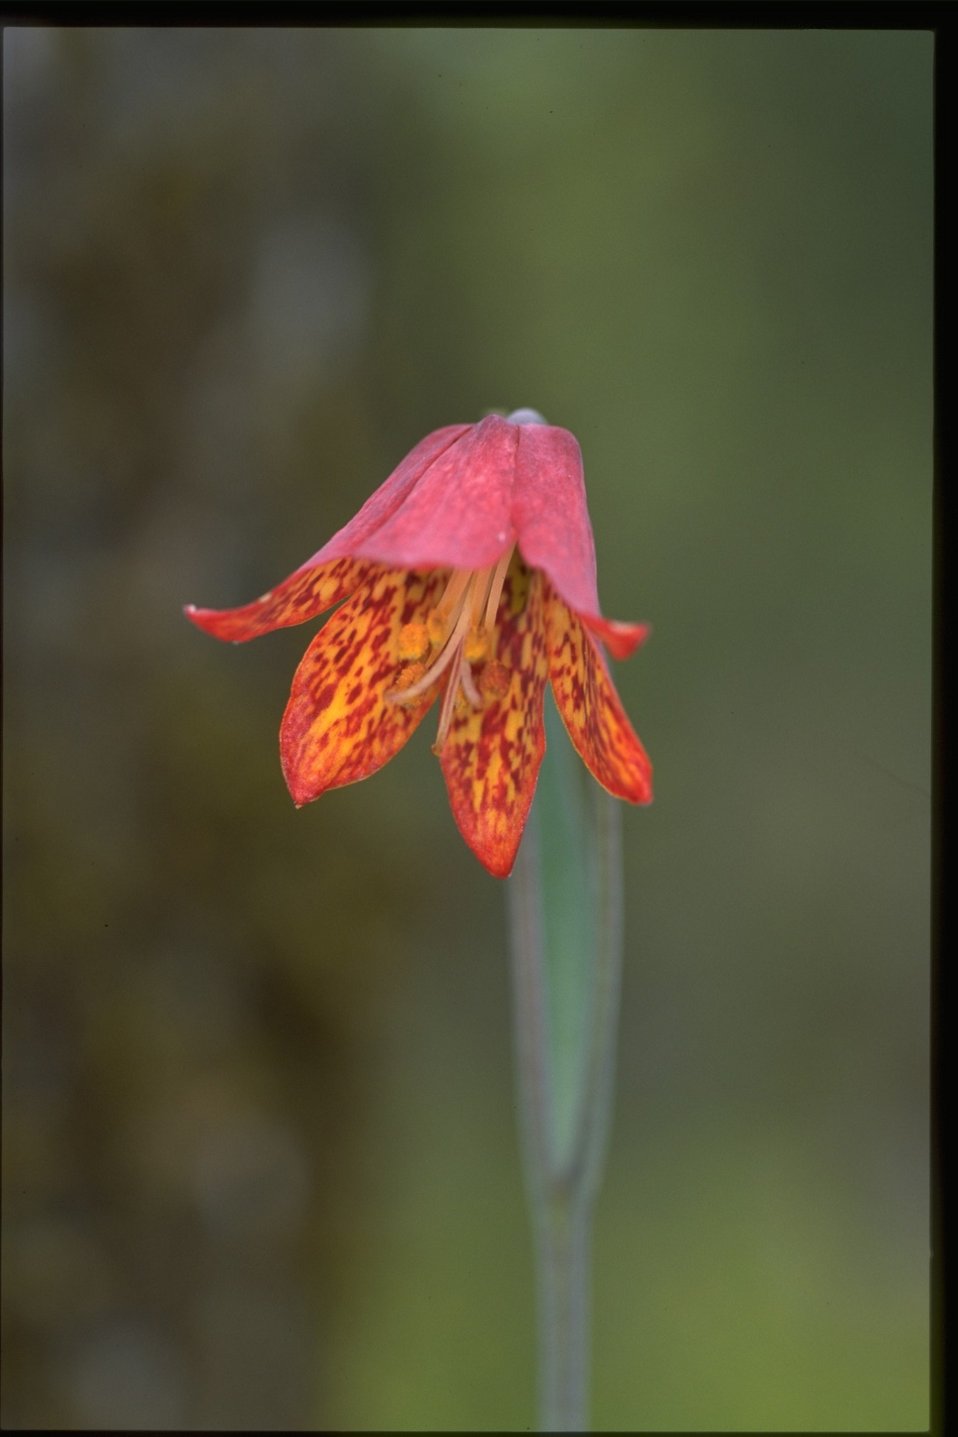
Closeup shot of Gentner's Fritillary, Fritillaria gentneri.